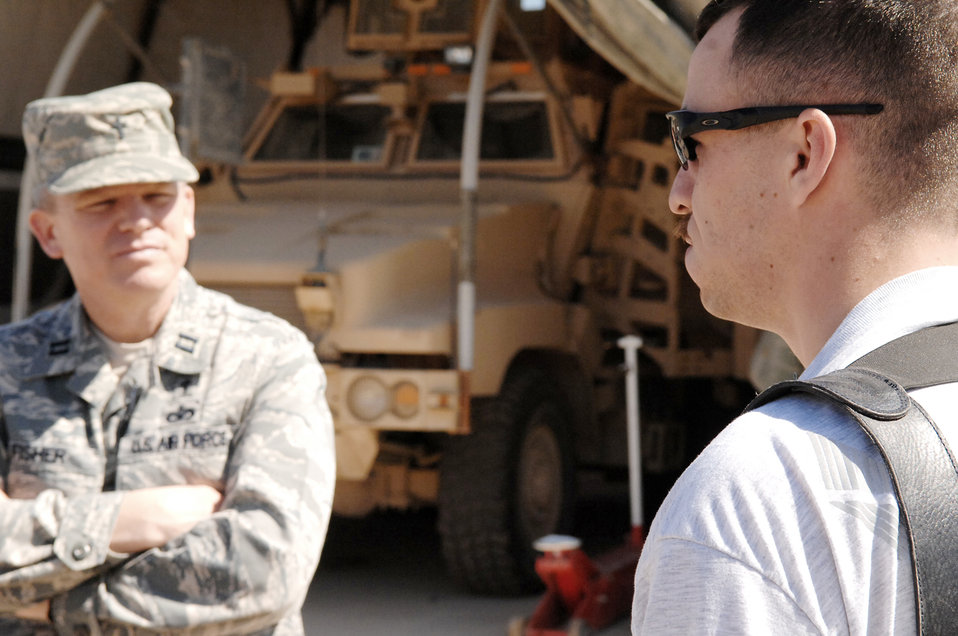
Chaplain provides ministry to Airmen in combat area

Chaplain (Capt.) Steve Fisher talks with Senior Airman David Kelly March 22, 2010, while on a mission to Camp Stryker, Iraq. Chaplain Fisher is the 732nd Air Expeditionary Group chaplain. Airman Kelly is a 732nd AEG Security Forces Squadron vehicle driver.